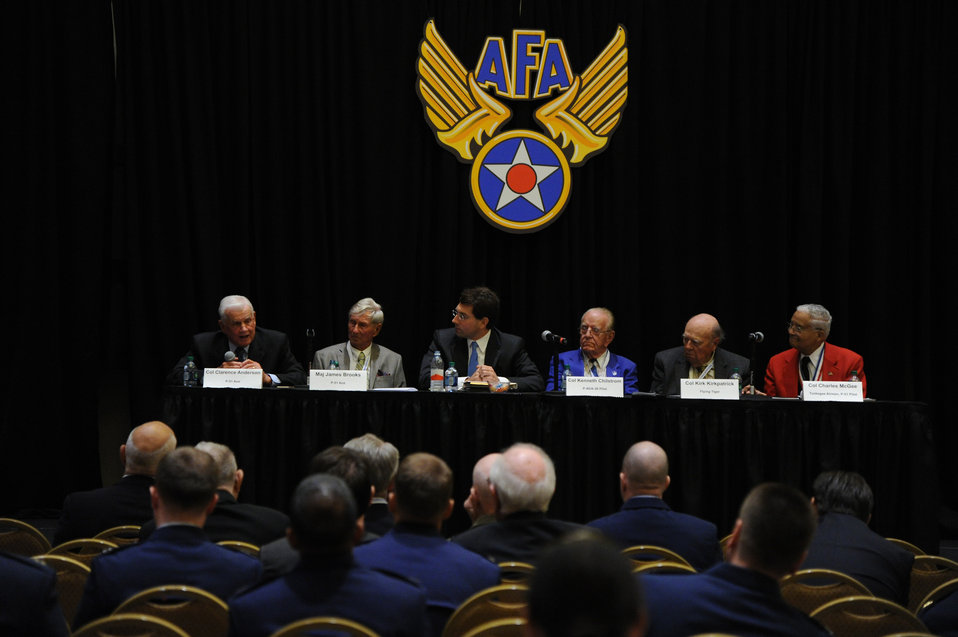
Retired Col. Clarence Anderson recalls various memories of flying during
World War II during the Air Force Association Air and Space Conference and Technical Exposition on Sept. 17, 2012, in Washington. Anderson's anecdote was just one of many
shared on the panel as the former fighter pilots spoke about the issues they
faced as part of the Army Air Corps during that era.